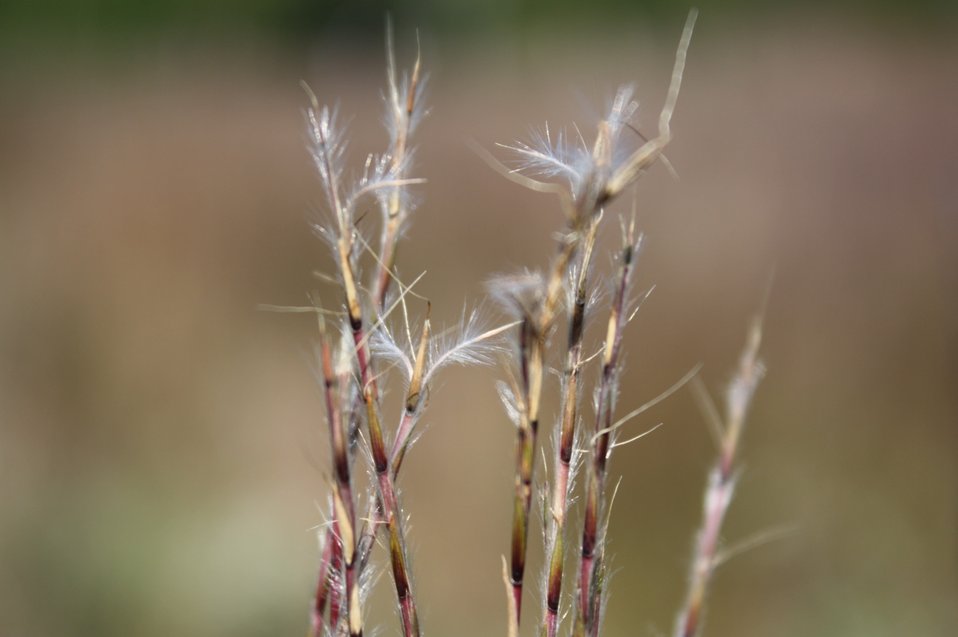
Little bluestem at Conscience Point National Wildlife Refuge.